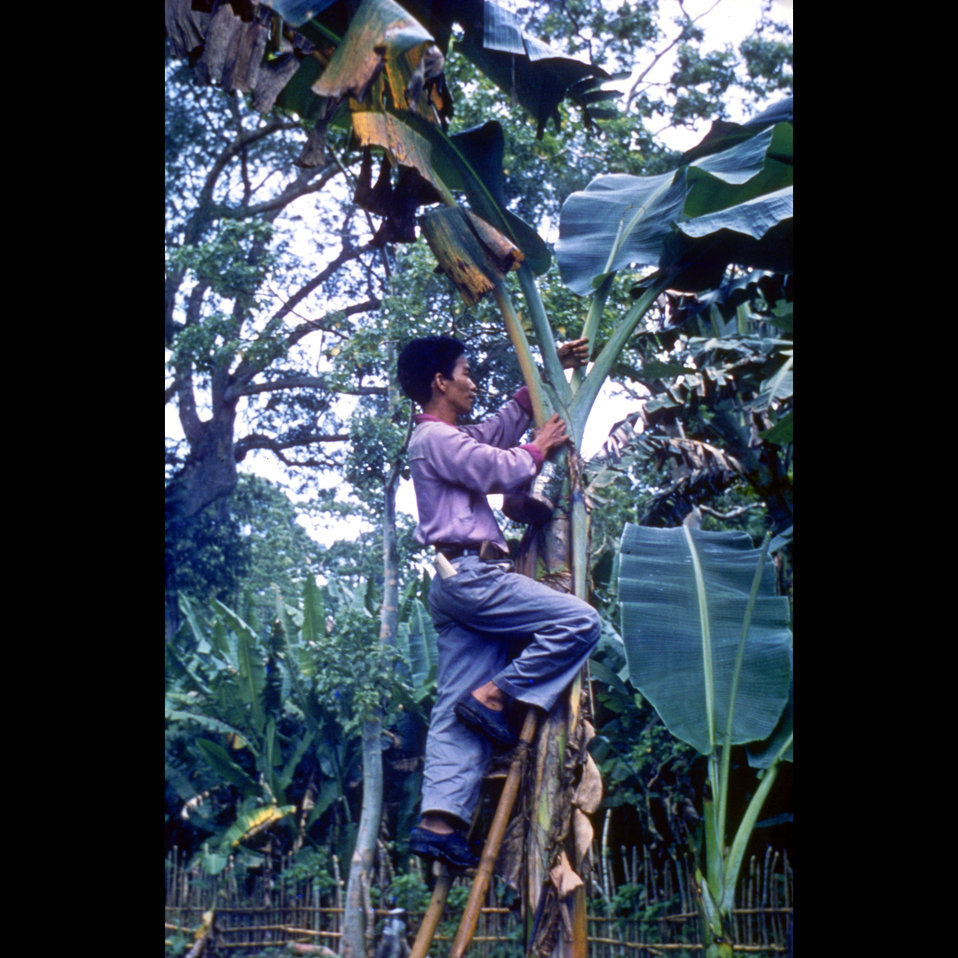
Local worker collecting Aedes mosquito larvae in Luzon, Philippines